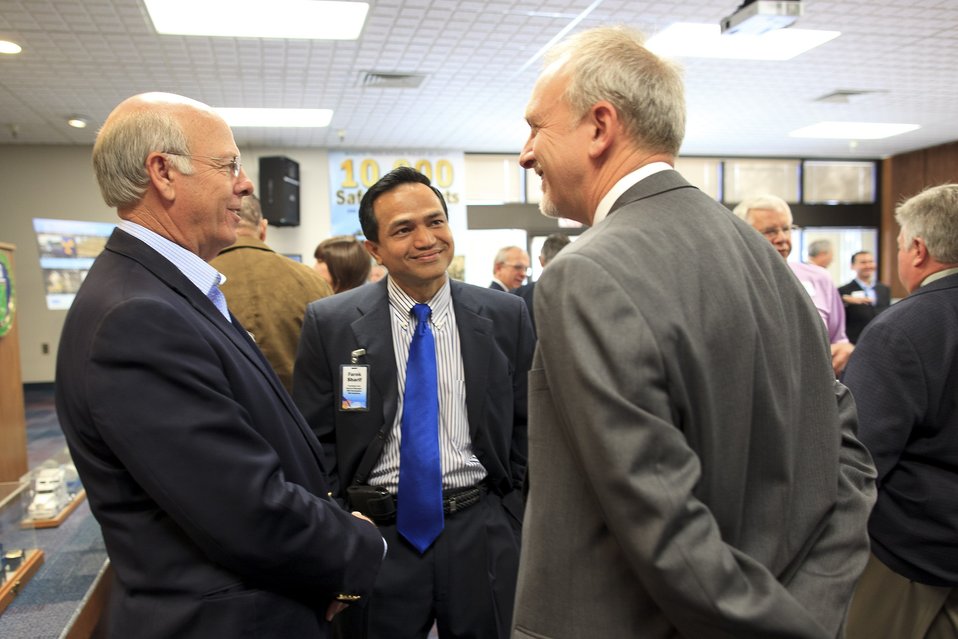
Los Alamos National Laboratory Celebrates 1000th Transuranic Waste Shipment